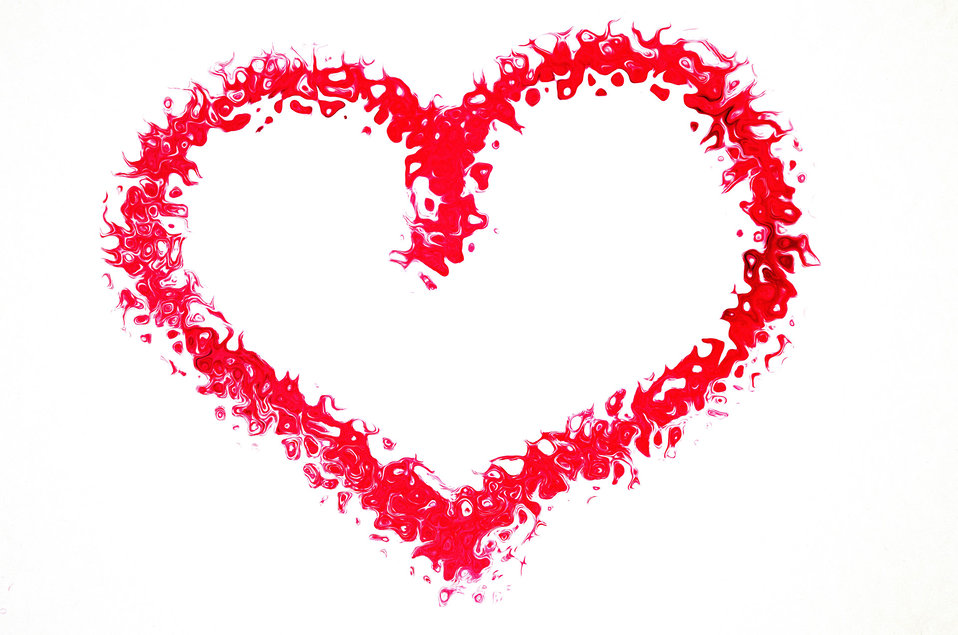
Heart of love.